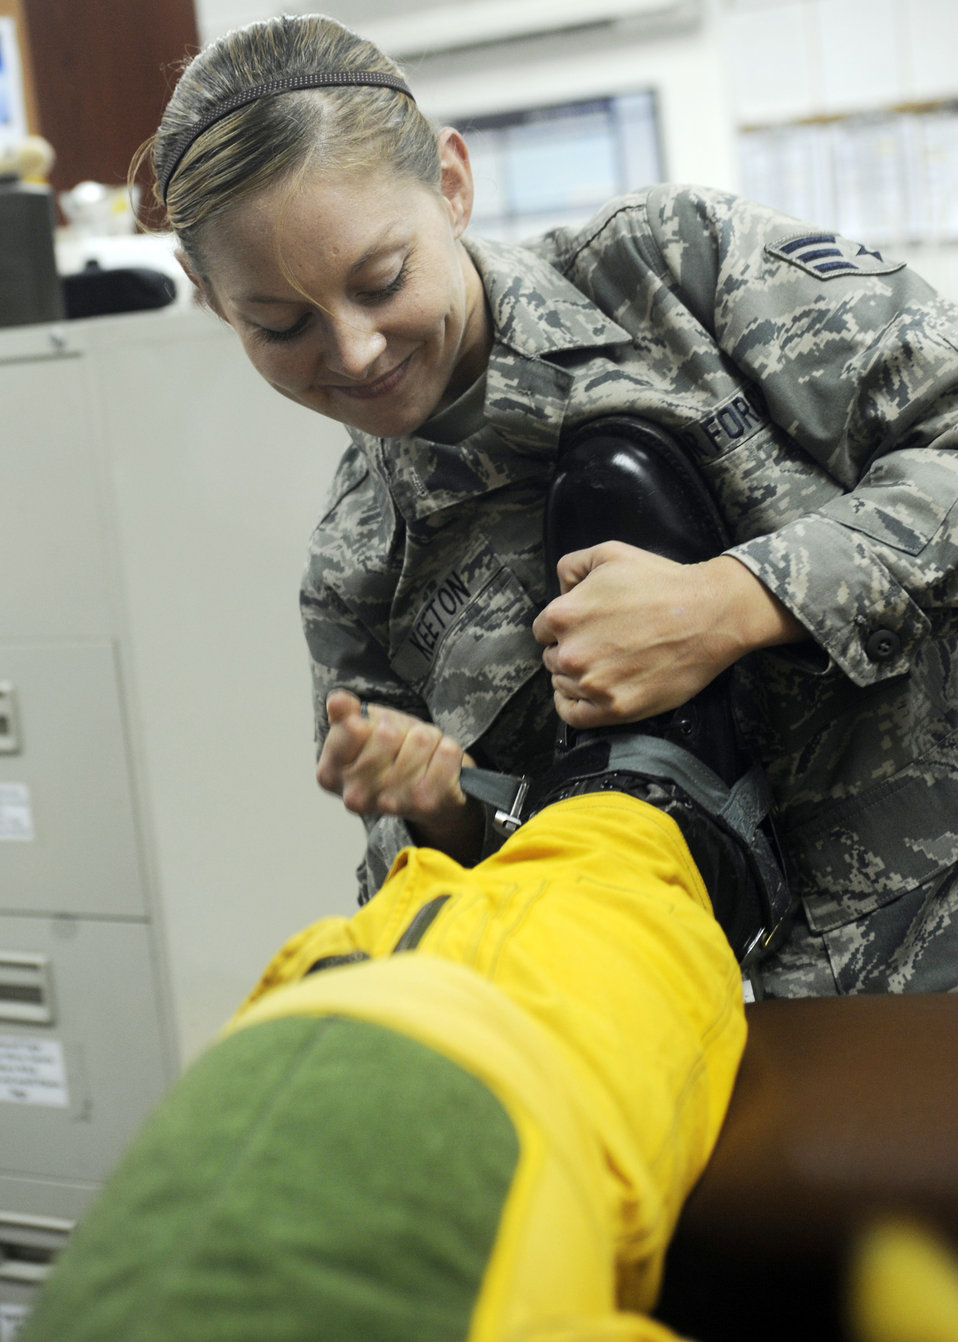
Airmen provide intelligence, surveillance, reconnaissance

Senior Airman Lynette Keeton tightens the boots of Capt. Peter J. Gryn's flight suit Oct. 4, 2009. The sortie was Captain Gryn's first combat mission. Both Airmen are deployed from Beale Air Force Base, Calif.